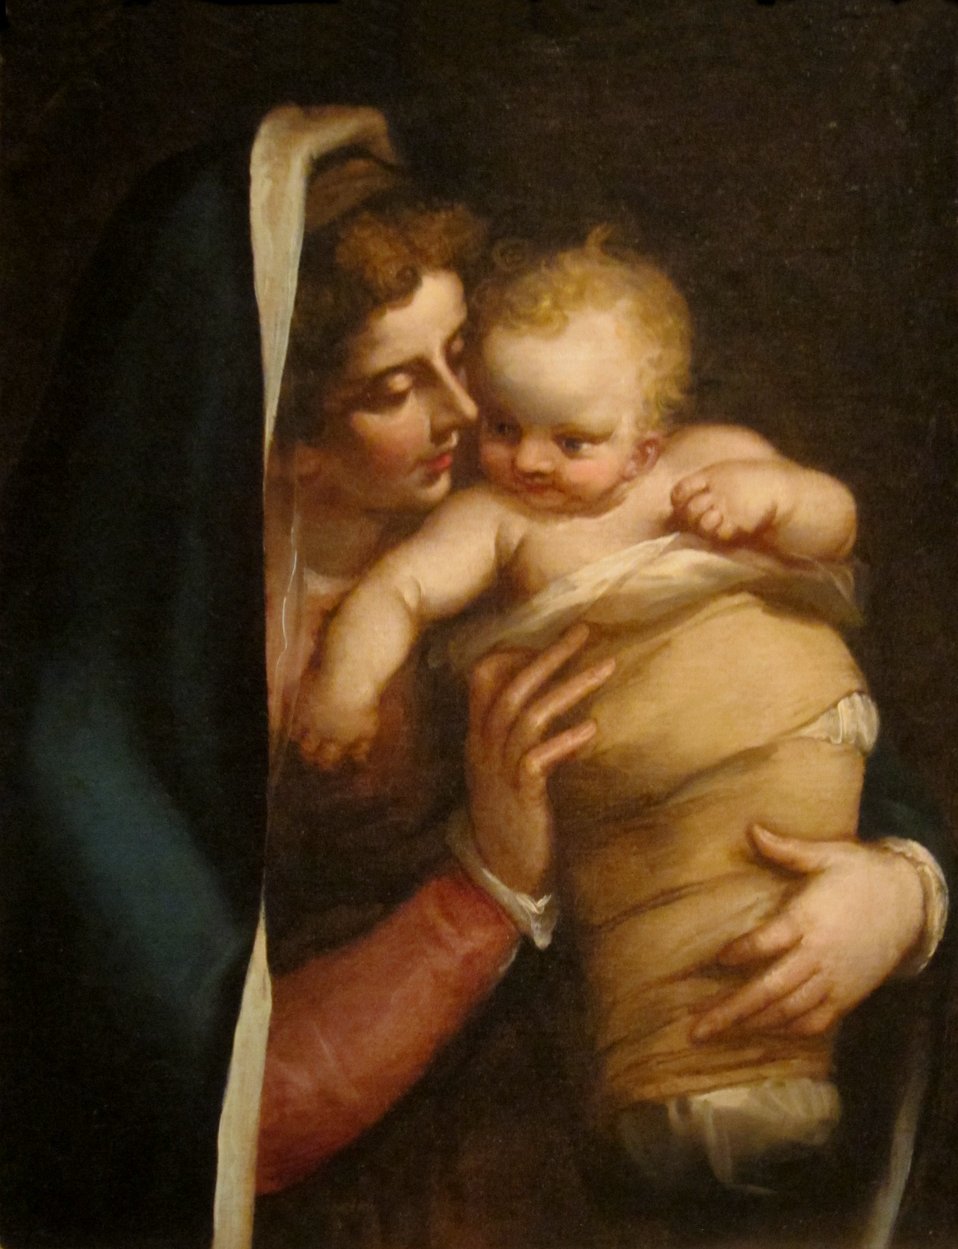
'Madonna and Child' by Luca Cambiaso, Dayton Art Institute